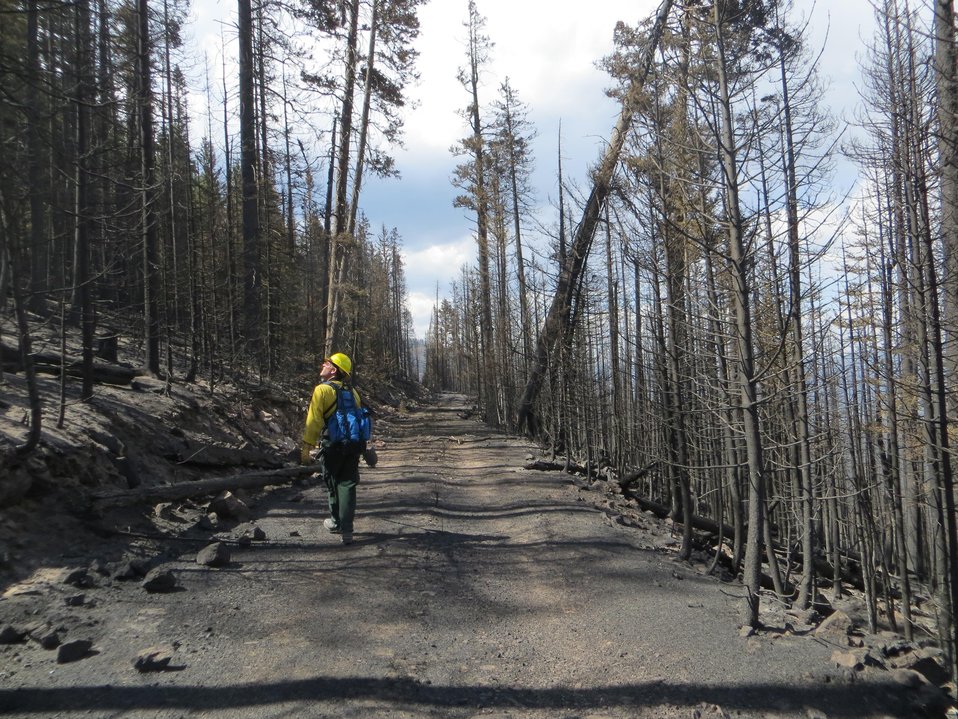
Burned Area Emergency Response (BAER) assessment teams examine the burned out areas at the Thompson Ridge Fire in the Sante Fe National Forest approximately 10 miles north of Jemez, NM. The fire began on May 31, 2013 by human ignition has consumed over 29, 903 acres. BAER teams are comprised of specialists that are highly experienced in conducting rapid watershed assessments and analyses and may include soil scientists, hydrologists, geologists, biologists, geographic information system specialists, archeologists, botanists, silviculturists, and civil engineers. (Silvaculturists are individuals that specialize in the care and cultivation of forest trees).